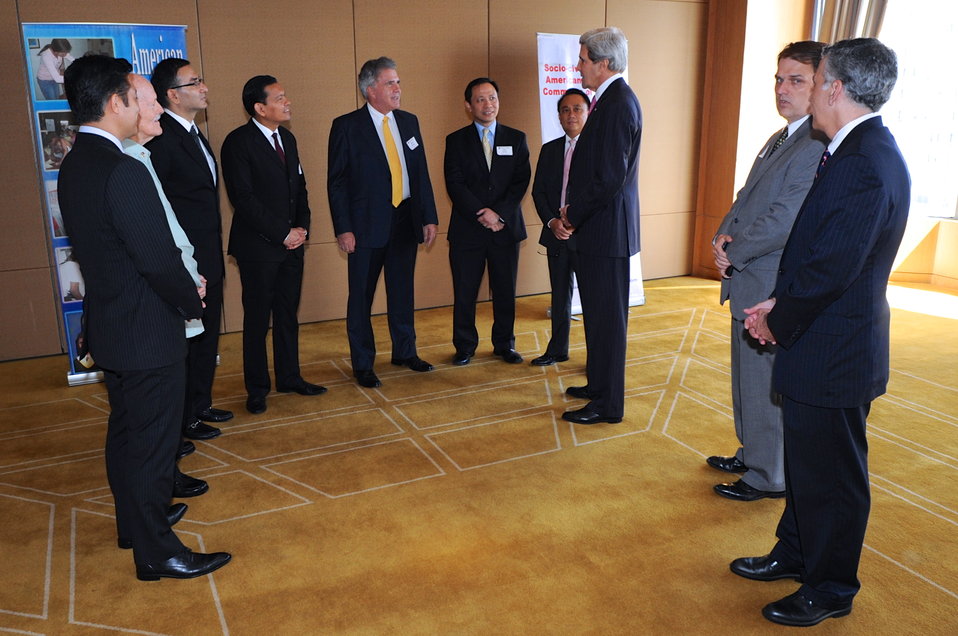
Secretary Kerry Meets With U.S. Business Leaders in Manila

U.S. Secretary of State John Kerry meets with U.S. business leaders before a speech to the American Chamber of Commerce in Manila, Philippines, on December 17, 2013.